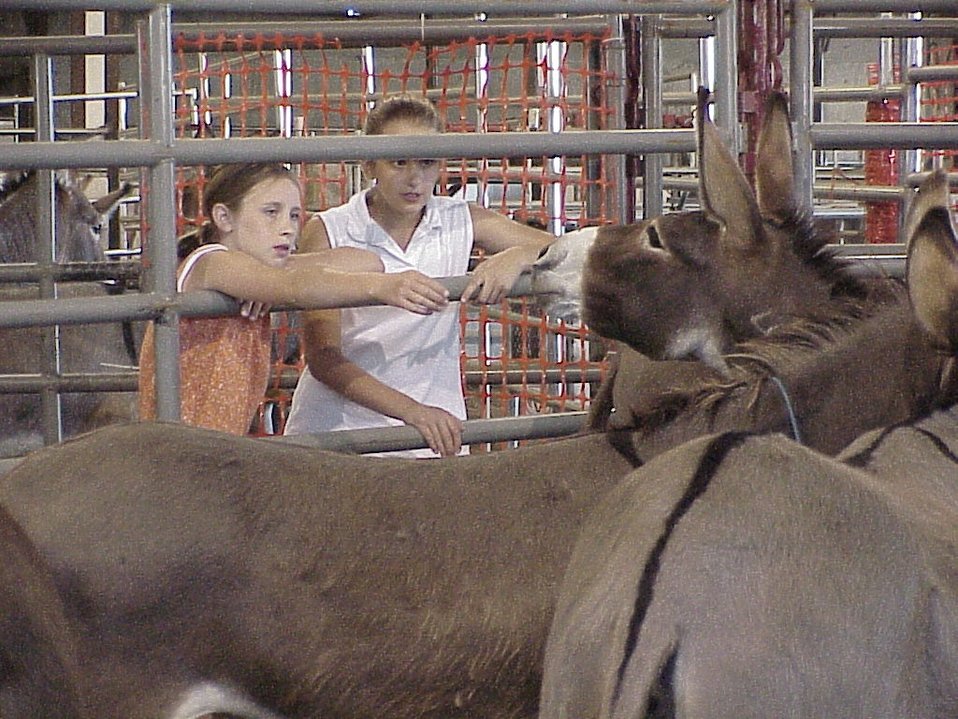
Lewiston Wild Horse and Burro Adoption Program Auction WHB indoor auction Cottonwood Field Office UCSC Upper Columbia Salmon Clearwater District